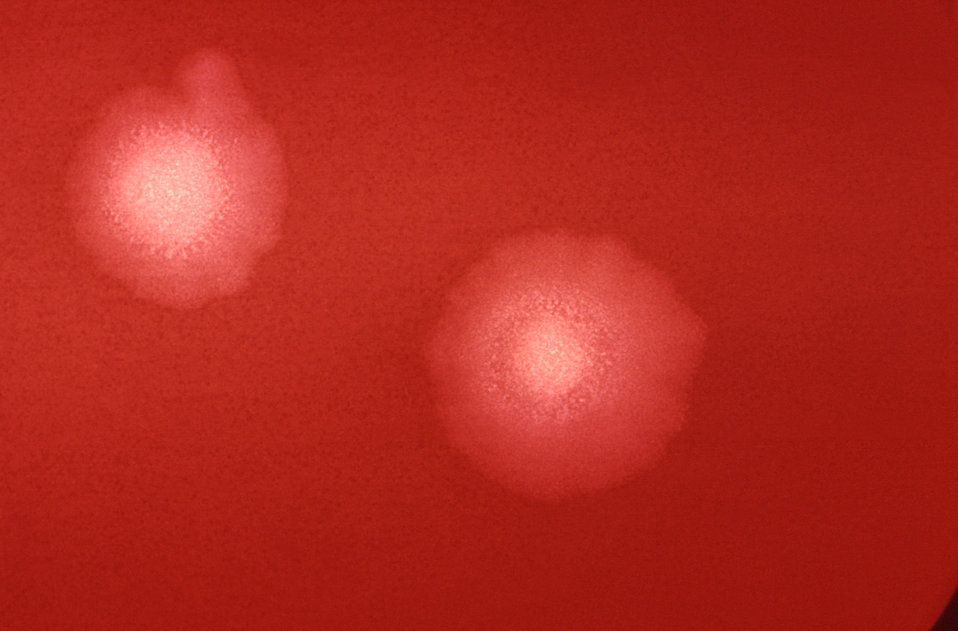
This 1972 photograph revealed the morphology displayed by two colonies of Bacteroides hypermegas bacteria that had been grown on blood agar medium for 48 hours.